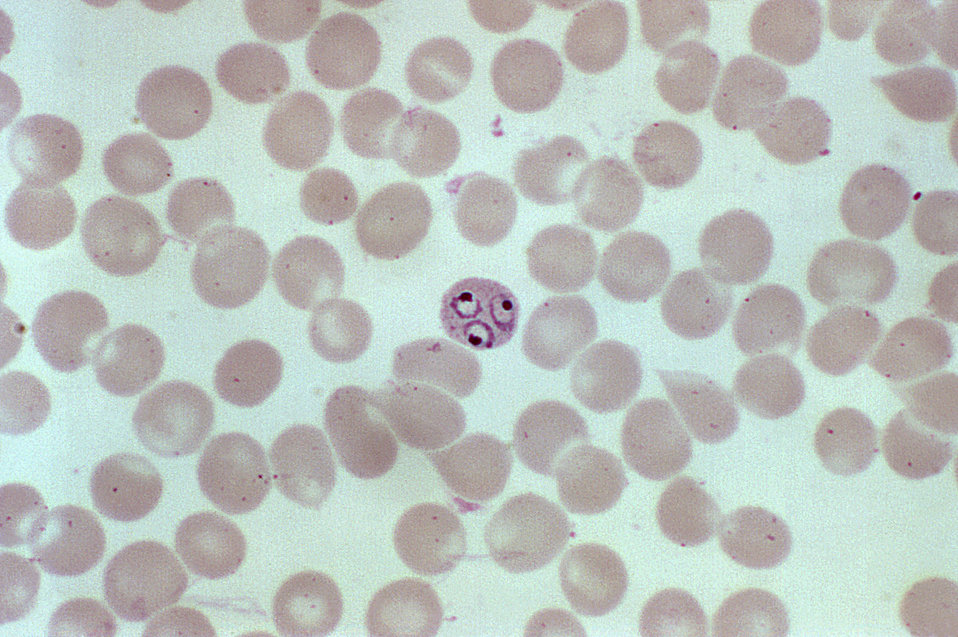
This photomicrograph shows a red blood cell being triply infected by Plasmodium vivax during the parasite's ring stage.